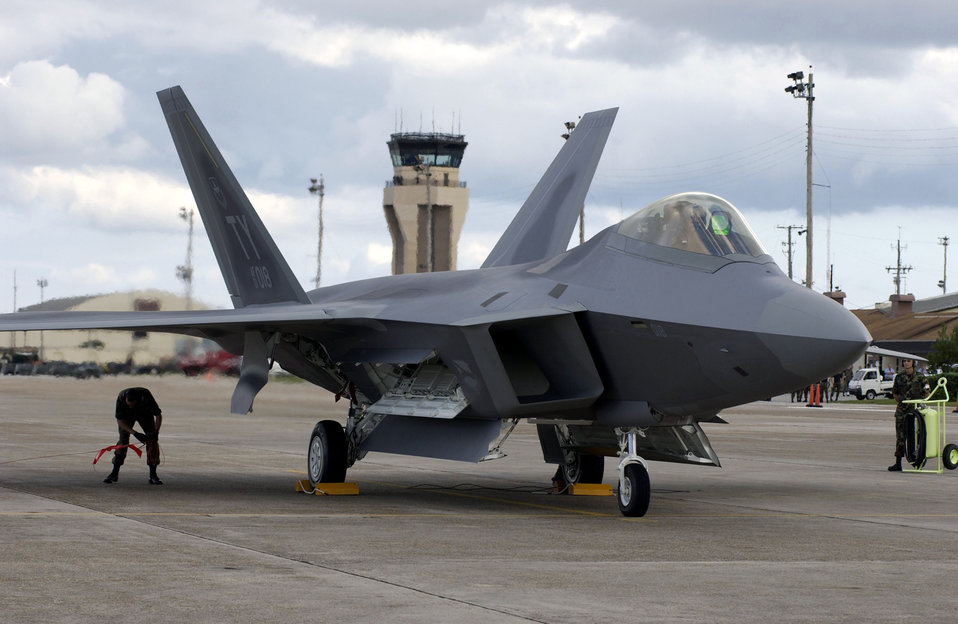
Raptor 18

TYNDALL AIR FORCE BASE -- Raptor 18, the first operational F/A-22 to be delivered to the Air Force, sits on the ramp as a ground crew checks the plane.